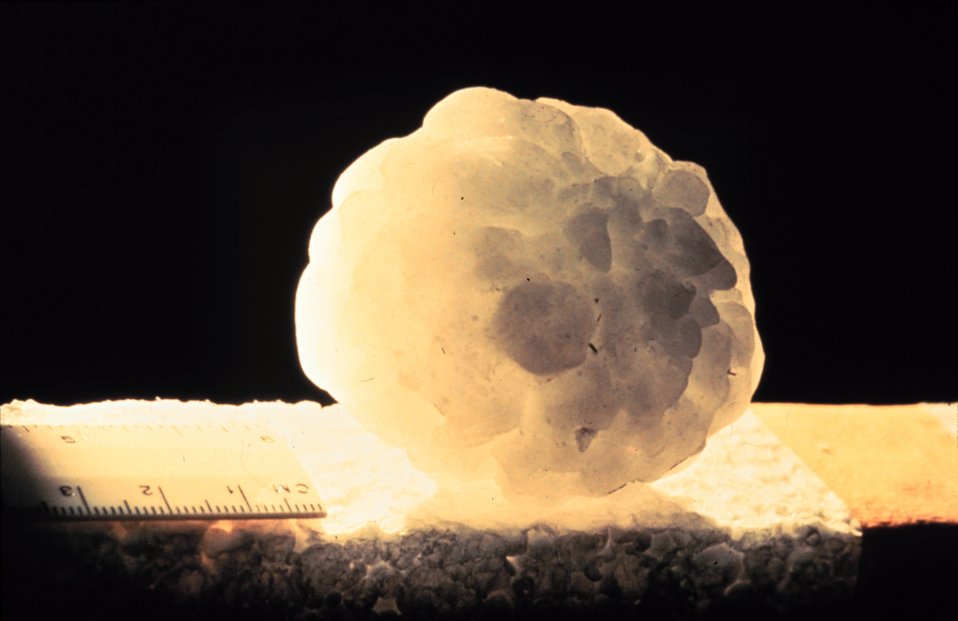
Aggregate hailstone. Large hailstone with smaller stones visible. Ruler shows radius of this remarkable hail stone. Diameter is approximately 6 centimeters - the size of a baseball.